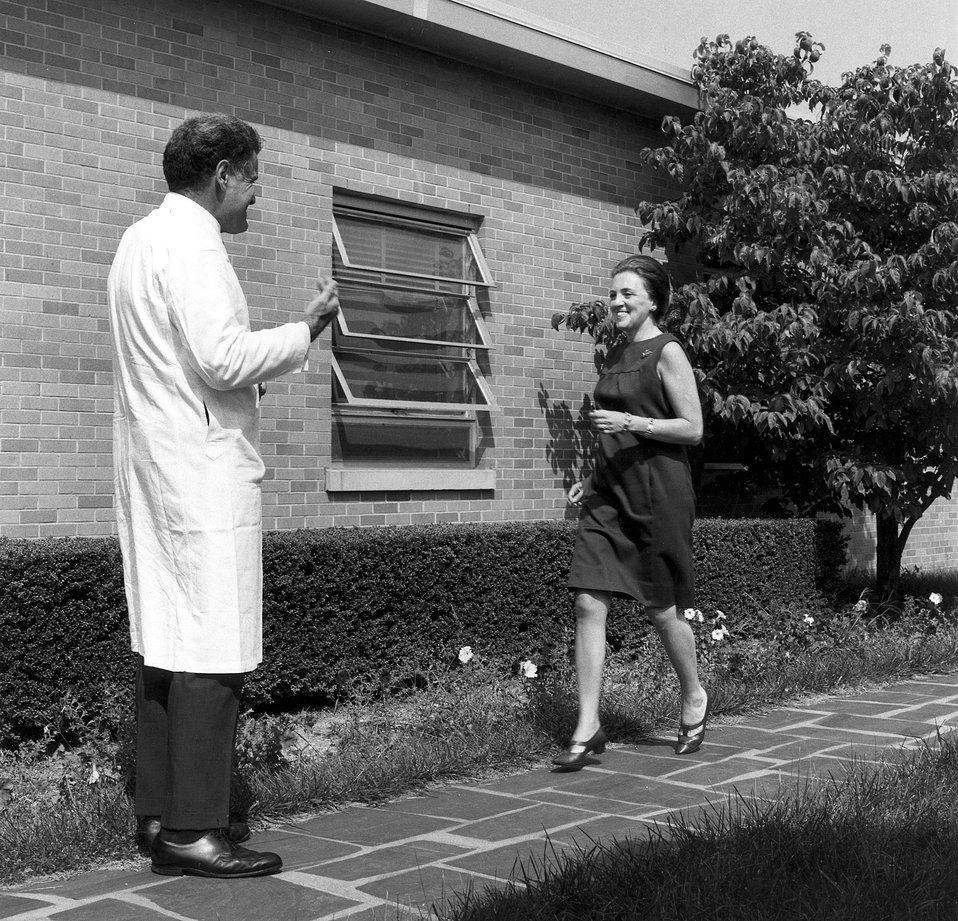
The gait of a patient receiving treatment for Parkinson's disease is being observed at the Medical Department.